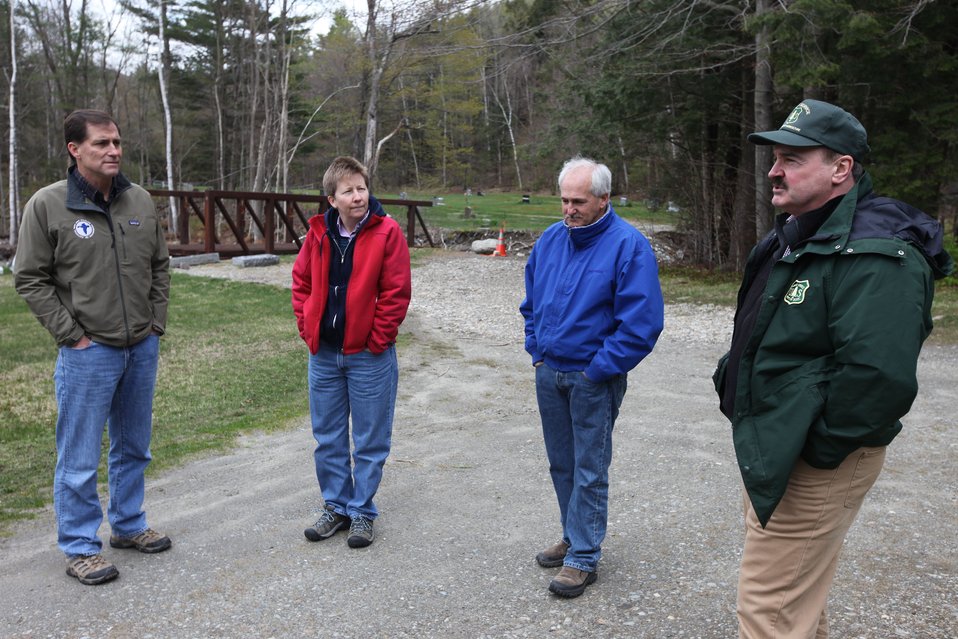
Dan Ashe, Jan Rowan Northeast Fish Passage Coordinator, Town Selectman Larry Strauss and Steve Roy from the US Forest Service

U.S. Fish & Wildlife Service Director Dan Ashe visits the Northeast Region
for a tour of the White River National Fish Hatchery in Bethel, Vermont on
April 27, 2012. The hatchery was devastated by Tropical Storm Irene and
Dan Ashe had the chance to meet and thank the staff for their heroic work.
Director Ashe also visited restoration/flood response/fish passage project
sites in Rochester, Vermont and met with local officials and staff from the
White River Partnership.